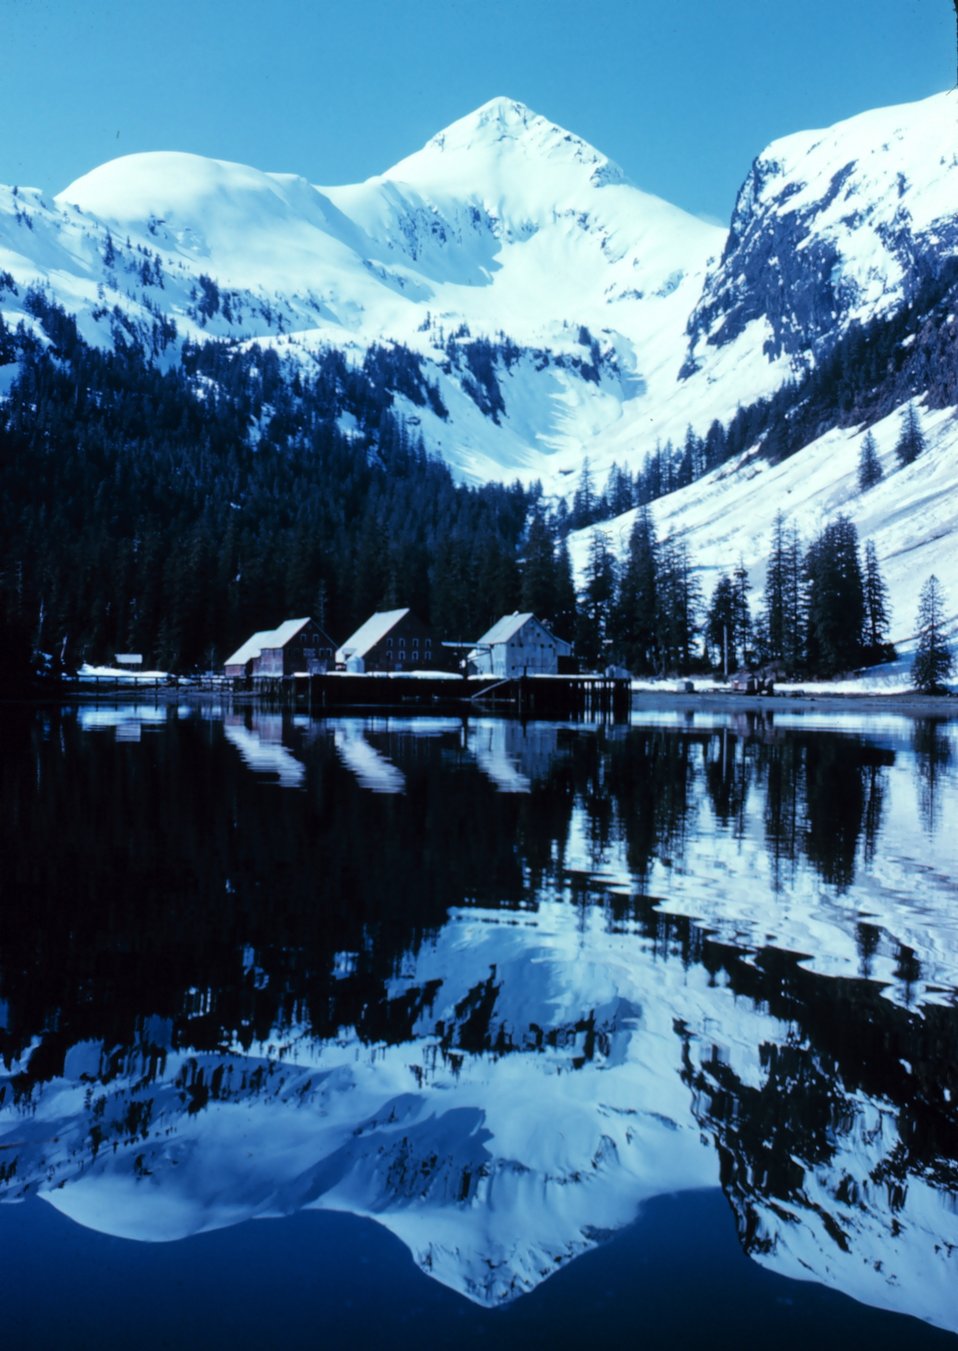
Herring reduction plant at Big Port Walter